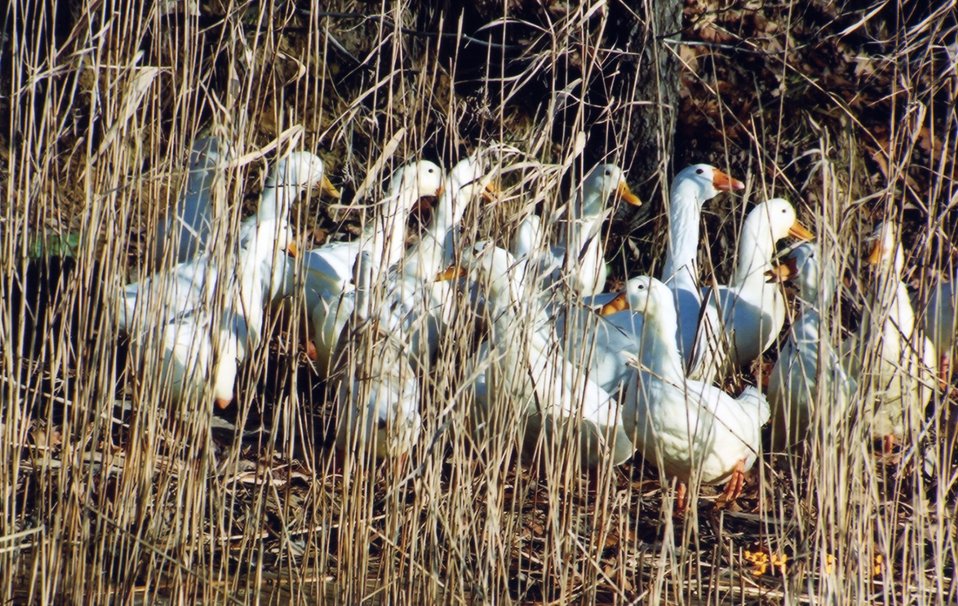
What appears to be a flock of domestic geese hanging out near the shoreline.